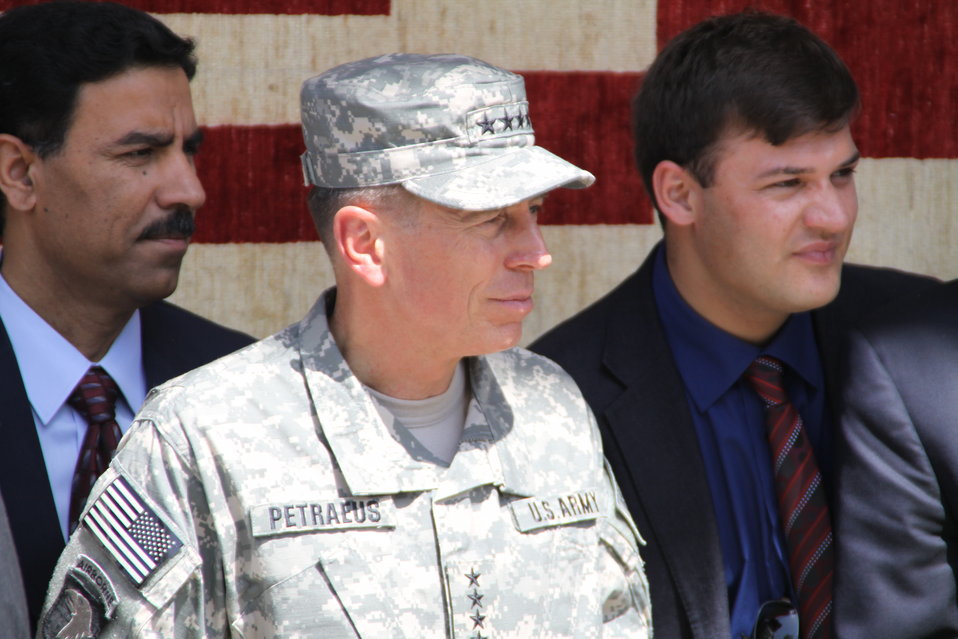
Kabul Official July 4th Celebration